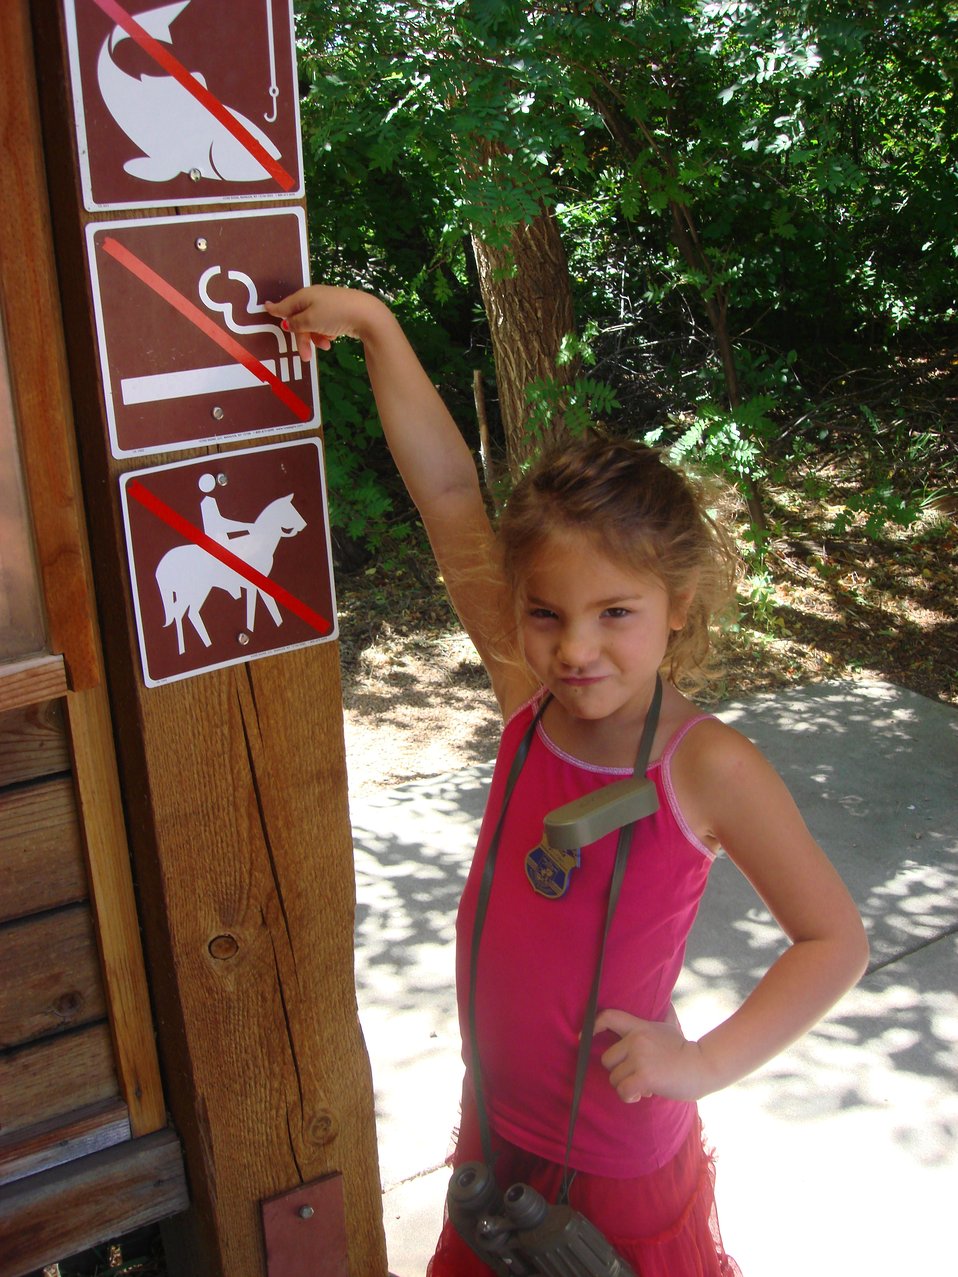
LE Girl